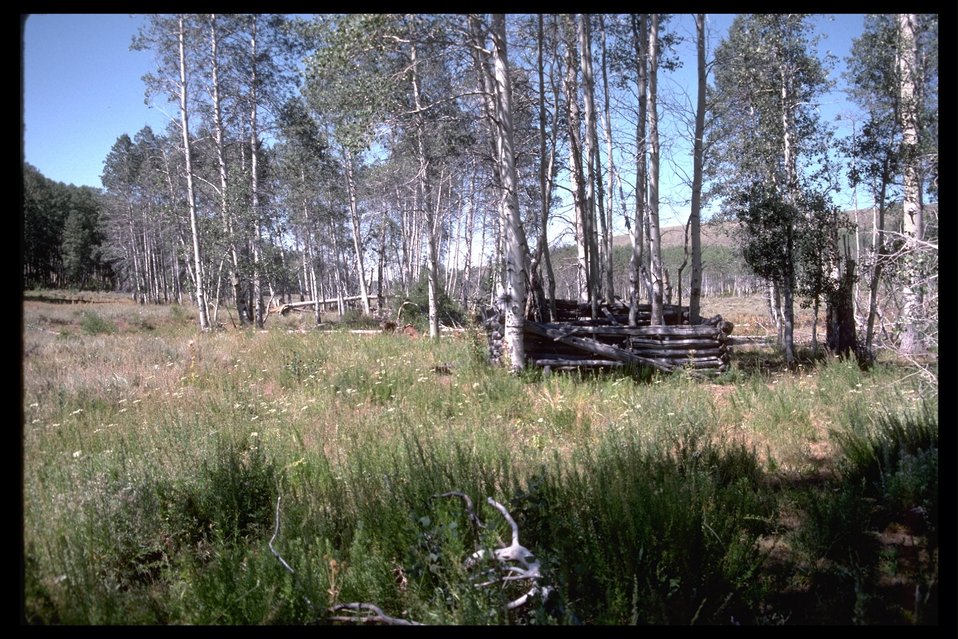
Old Cabin next to headwaters of Little Fish Creek.